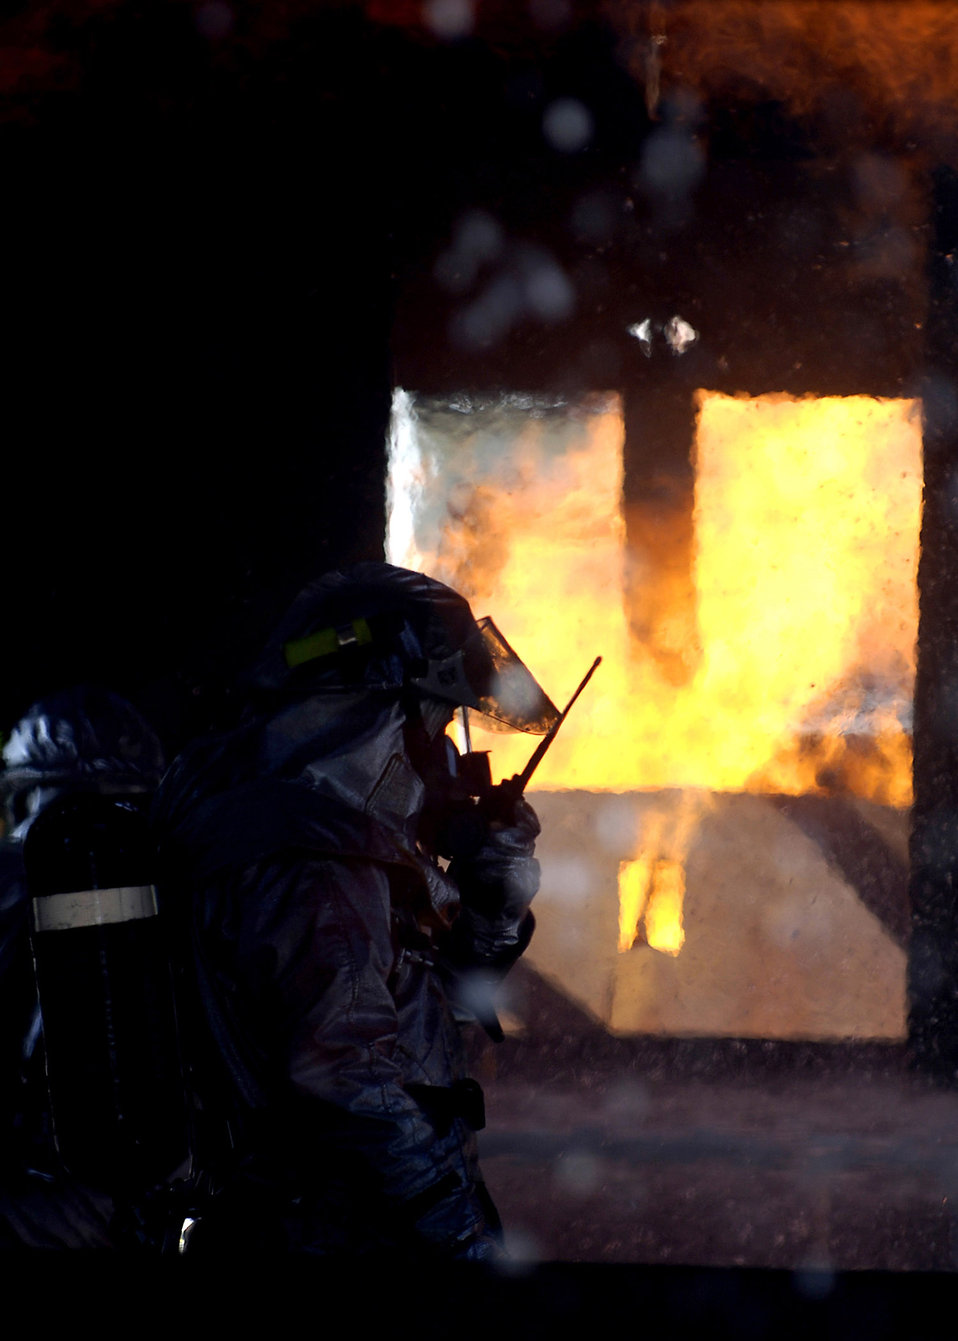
Fightin' fires

Staff Sgt. Daniel Ormsby radios information back to a control tower from inside a burning aircraft during a simulated crash at Misawa Air Base, Japan, Sept. 10. The training is conducted in order to acquaint Towada City fire fighters with Air Force training in case of crash off base. Sergeant Ormsby is a 35th Civil Engineer Squadron firefighter.